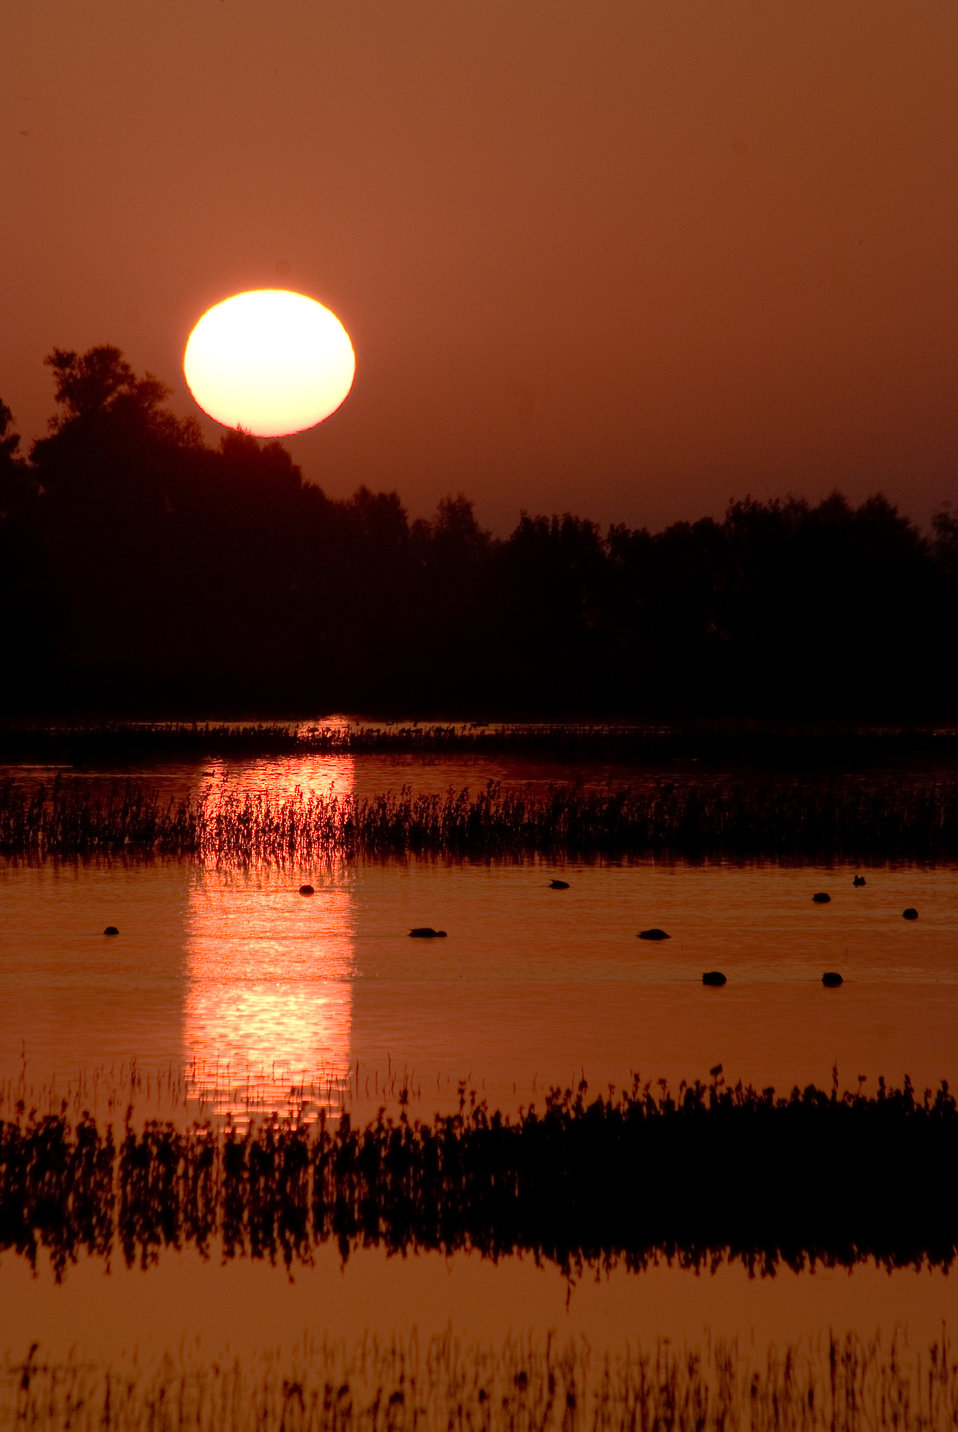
orange sunset

Sacramento National Wildlife Refuge, CA
Photo: Justine Belson, USFWS

Sacramento National Wildlife Refuge
Oct. 2010